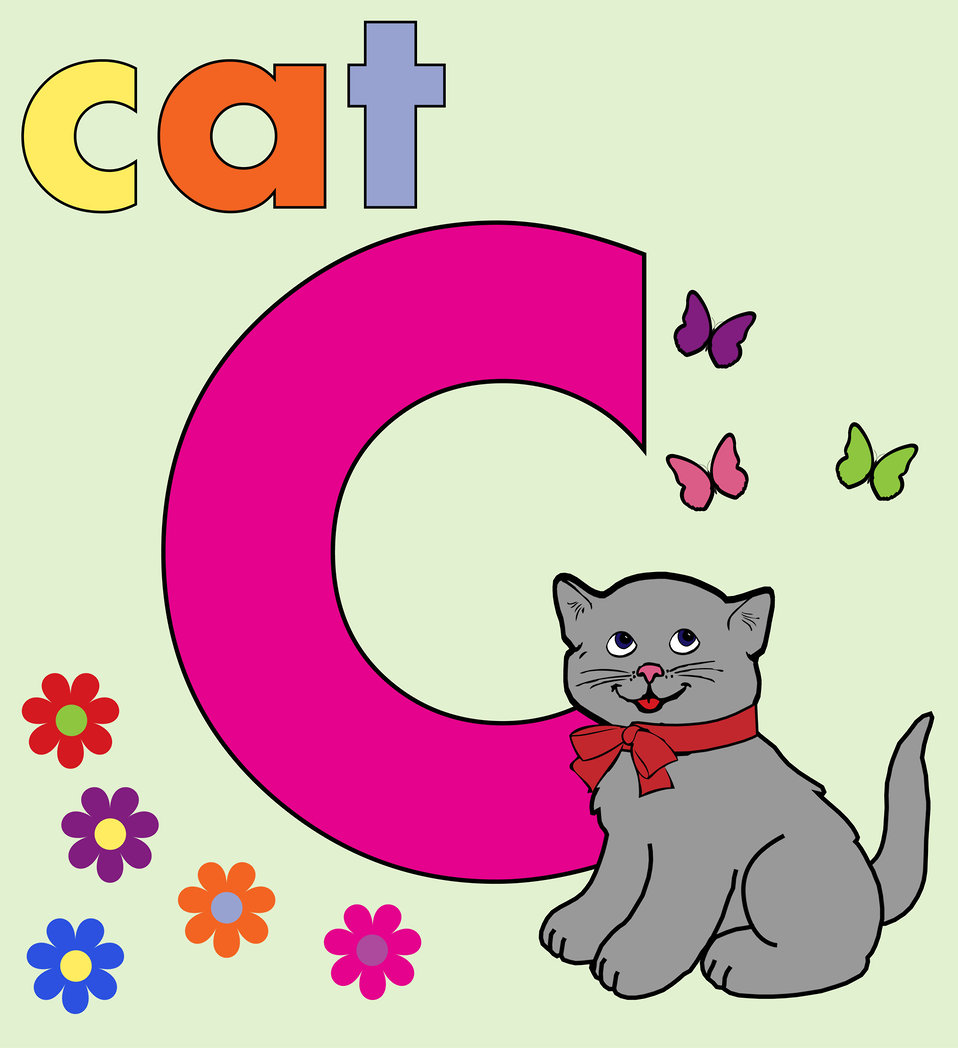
Cat alphabet letter c

Cute kitten cat with alphabet letter c for kids.